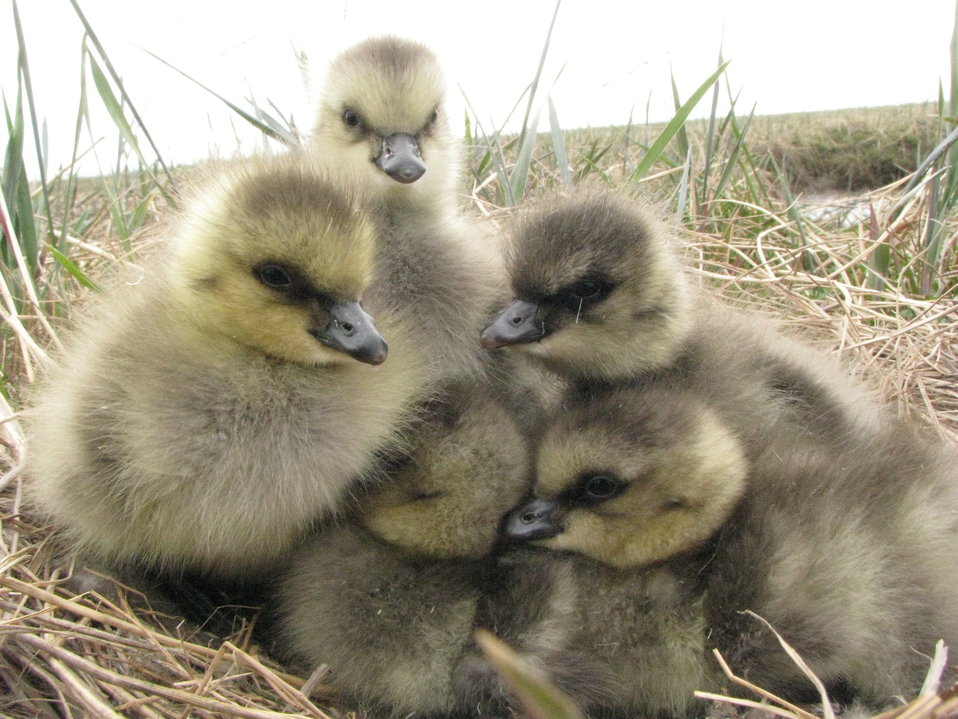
Cackling goose goslings

USFWS Yukon Delta NWR
Say Cheese!!